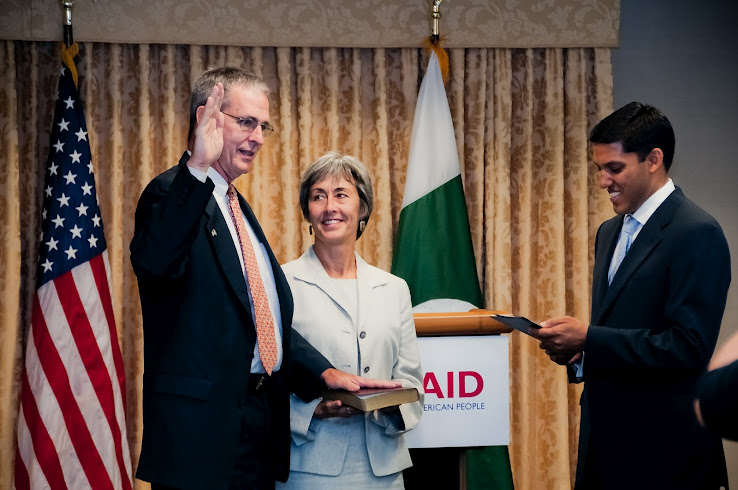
Jonathan Conly

WASHINGTON, D.C. – This week, Jonathan Conly was sworn in as the new U.S. Agency for International Development (USAID) Country Director for Pakistan. USAID Administrator Dr. Rajiv Shah presided over the ceremony and administered the oath in the presence of Mr. Conly’s family, friends, and colleagues, as well as members of the Pakistani-American community and the Pakistan Embassy’s Deputy Chief of Mission, Dr. Asad Majeed Khan.